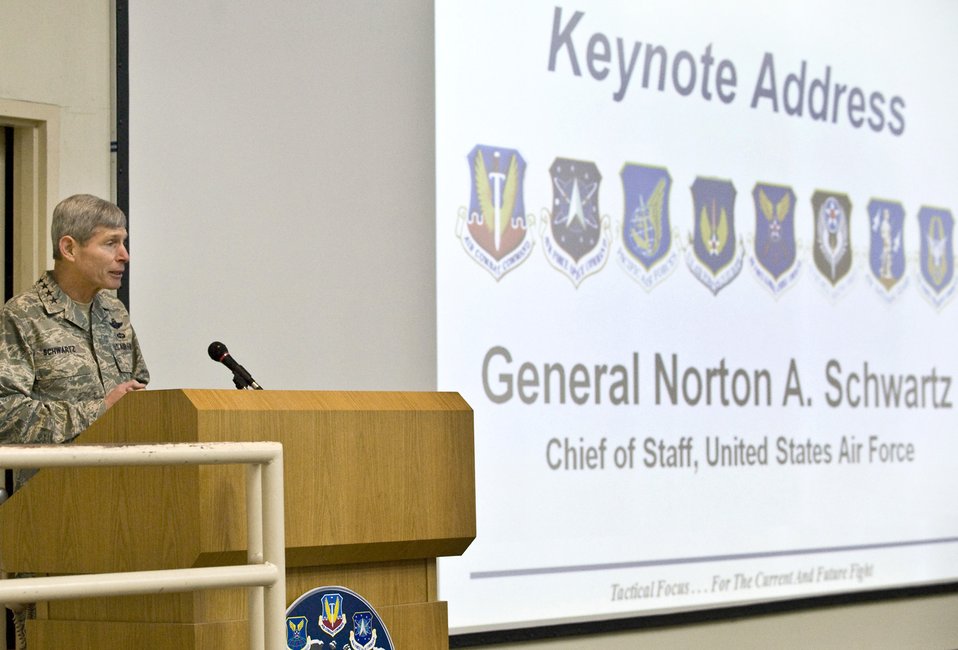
CSAF delivers keynote address at Weapons and Tactics Conference

Air Force Chief of Staff Gen. Norton Schwartz delivers opening remarks at the Combat Air Forces Weapons and Tactics Conference Jan 10, 2011, at Nellis Air Force Base, Nev. WEPTAC is an annual event that brings together hundreds of war fighters to discuss current issues, to look at future issues and to provide solutions for joint employment of forces.